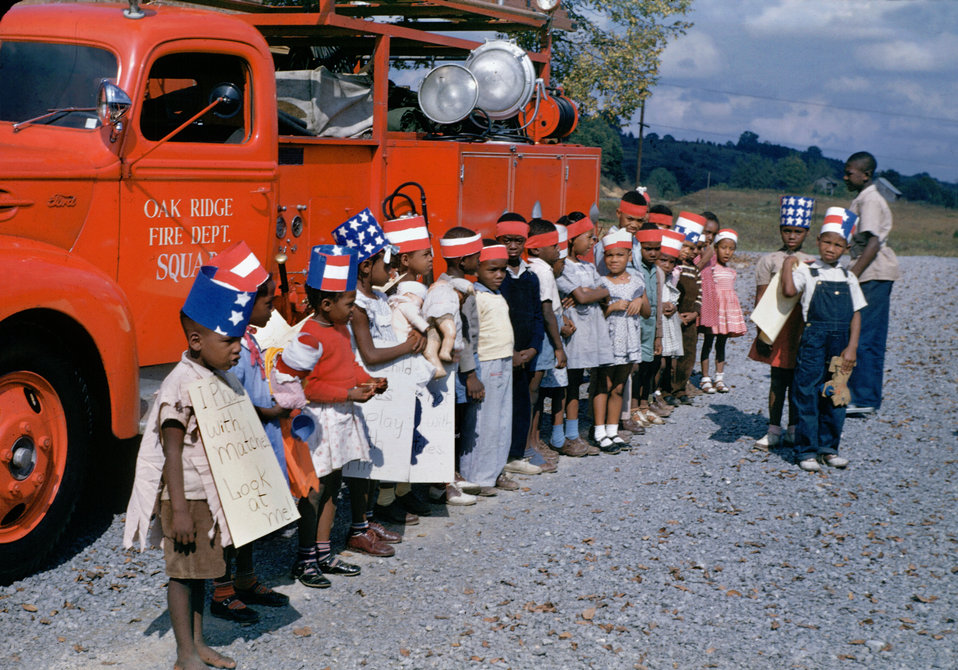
1940s Fire Truck and kids on Kodachrome in Oak Ridge Tennessee

1940s DOE photo by Ed Westcott

1940s Fire Truck and kids on Kodachrome in Oak Ridge Tennessee